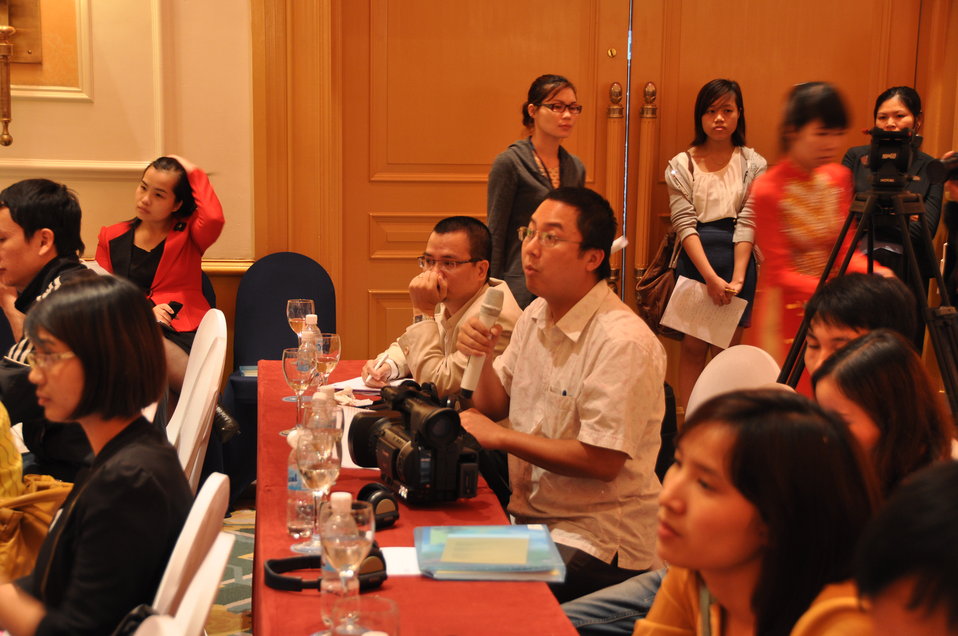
Provincial Competitiveness Index Launch, March 14, 2013

Hanoi, March 13, 2013